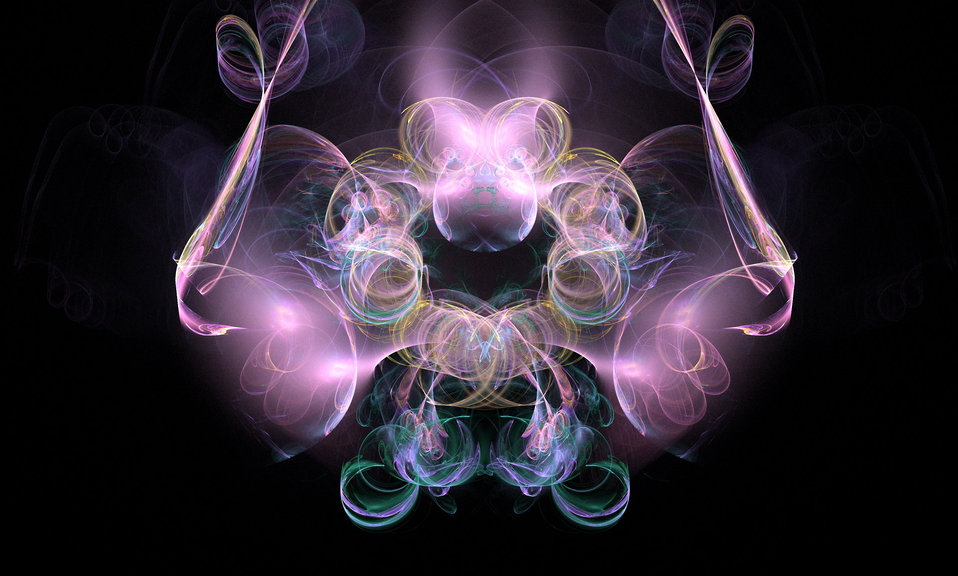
Pink fantasy

Fractal image in pretty colours.